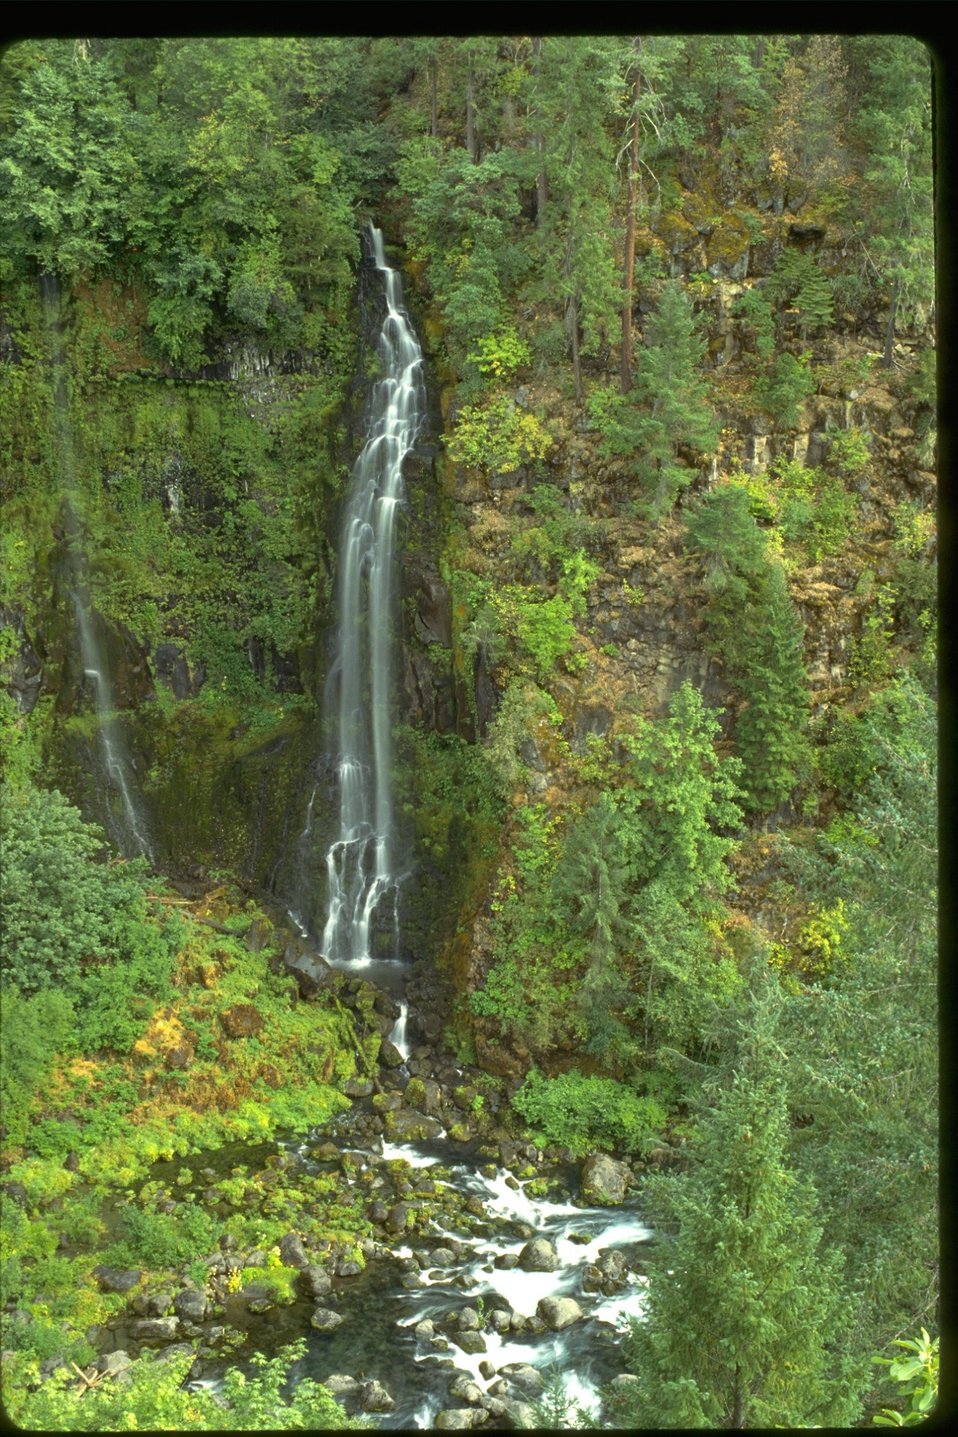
Barr Creek Falls